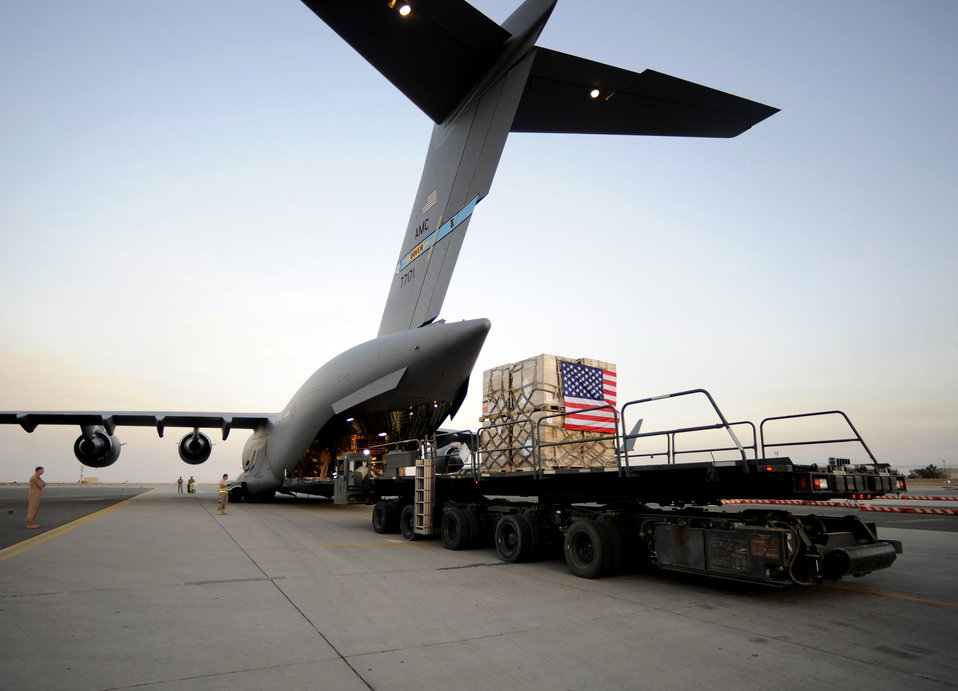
U.S. airlift aids Pakistan's war-torn Swat Valley

A pallet containing humanitarian relief supplies destined for Pakistan is prepared to be loaded into the cargo bay of a C-17 Globemaster III May 20 at an air base in Southwest Asia.